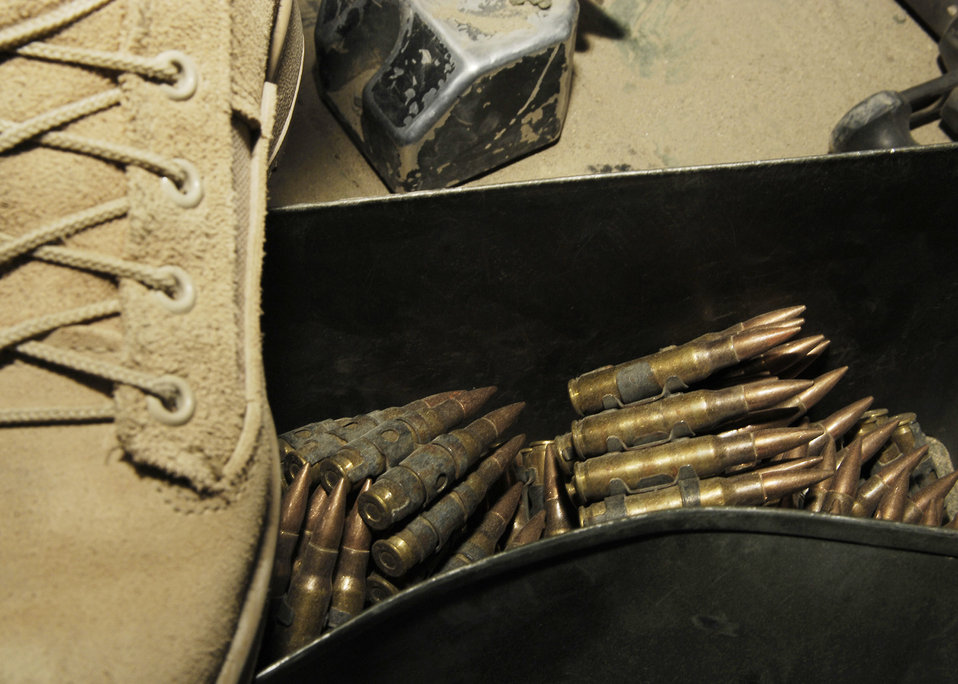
Lock and load

Ammunition, weapons, dog tags, water, sunscreen and snacks are essential to Airman 1st Class Diana Lopez at Bagram Airfield, Afghanistan. She is assigned to the 455th Expeditionary Security Forces Squadron and deployed from Edwards Air Force Base, Calif.